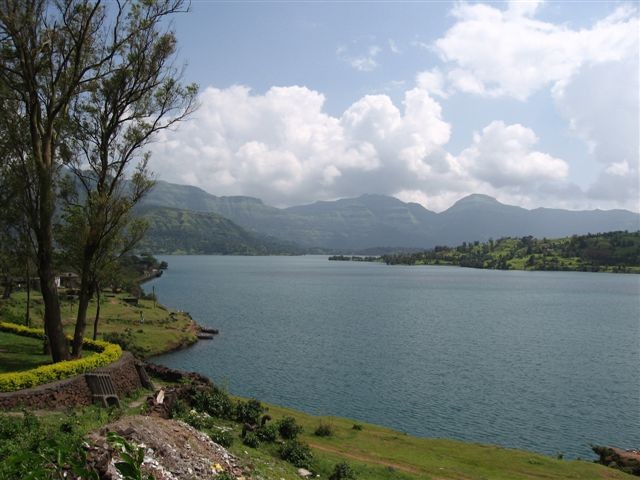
Uploaded by request of Jyotsna Kapadia.

Taken at Bhandardara, India on September 16, 2007.

Reflection of blue sky in crystal clear water on the green earth, cool breeze and a peaceful environment !